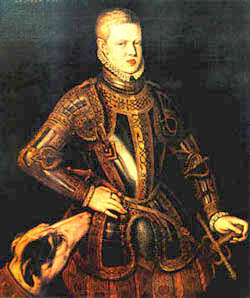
SebastianPortugal